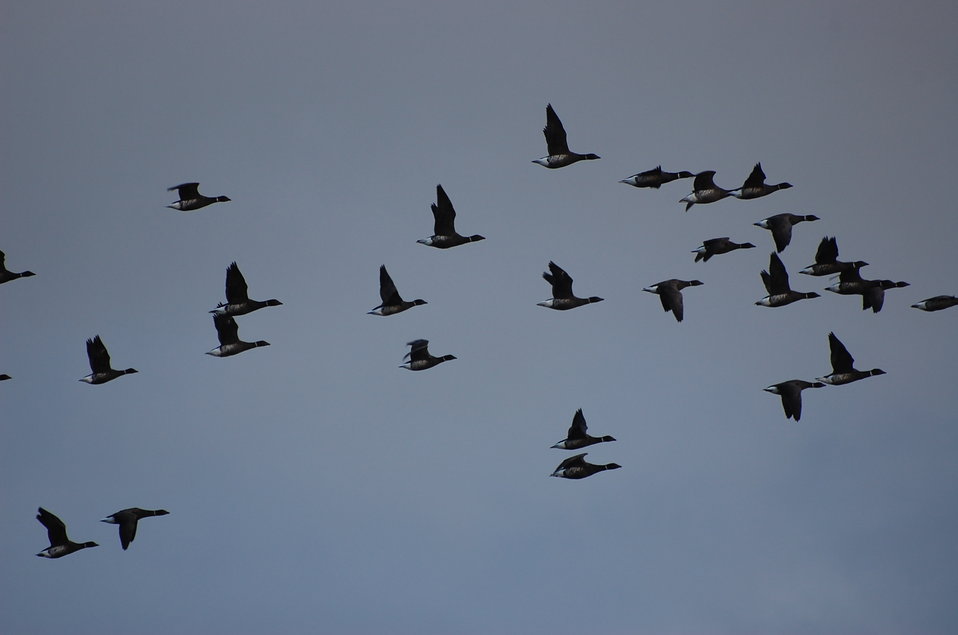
Brant at Izembek Lagoon, Izembek National Wildlife Refuge